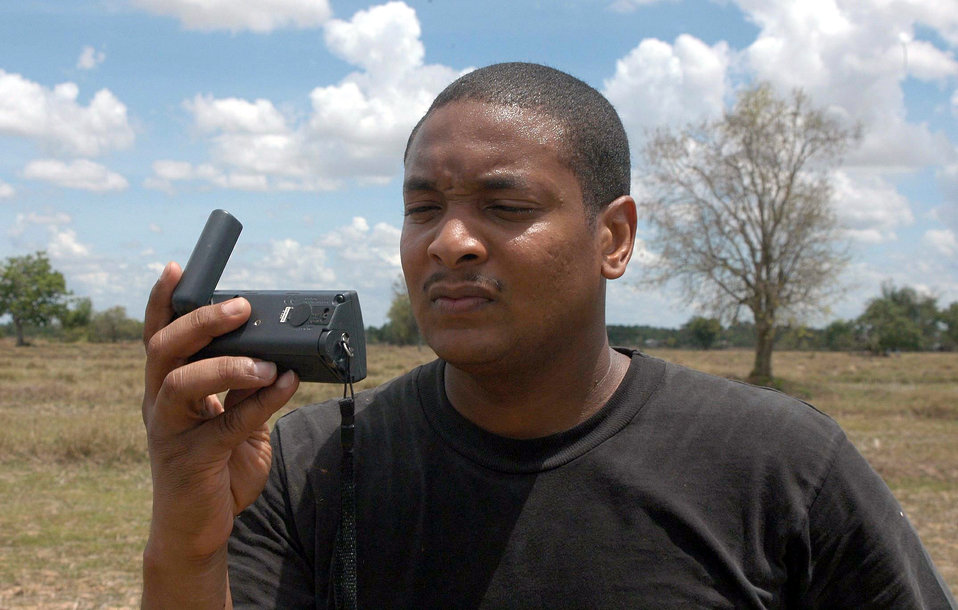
Airmen make drops in Thailand

BAN NONG SONG, Thailand -- Master Sgt. Andre Baker checks a Global Positioning System device at a drop zone during Cobra Gold 04. Cobra Gold is an exercise designed to improve U.S., Thai, Singaporean, Mongolian and Filipino combined readiness and interoperability, enhance security relationships and demonstrate U.S. resolve in the region. Sergeant Baker is assigned to the 353rd Operations Support Squadron at Yokota Air Base, Japan.